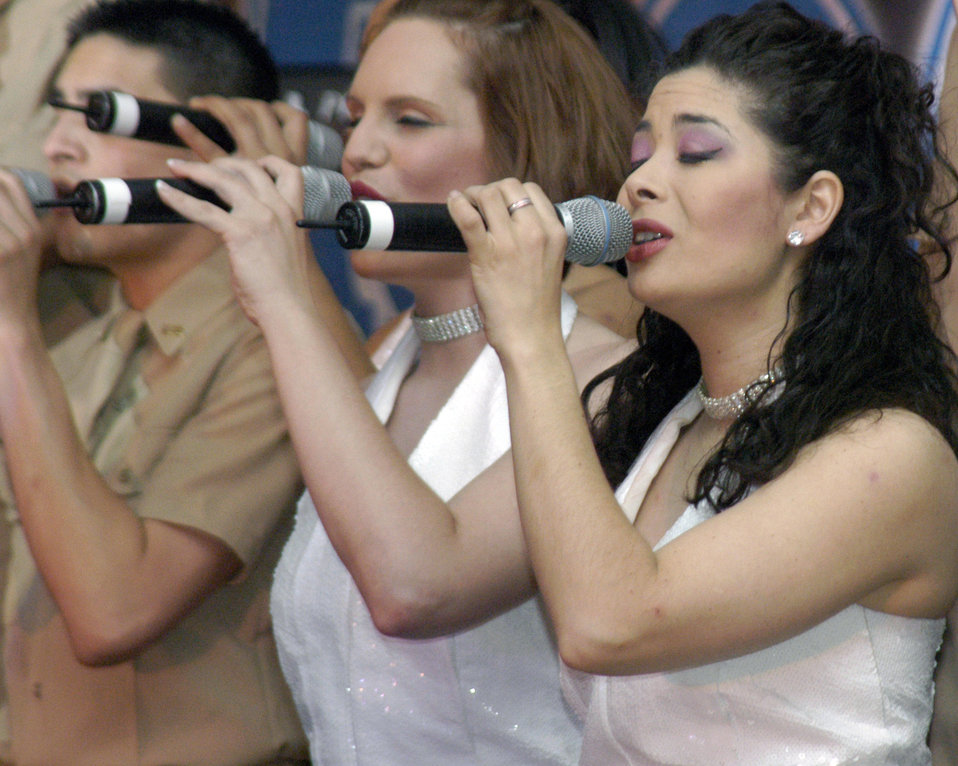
Tops in Blue boosts servicemembers' morale through song

Members of Tops in Blue perform May 2 for an audience comprised of mainly Airmen of the 386th Air Expeditionary Wing at an undisclosed location. The show, themed